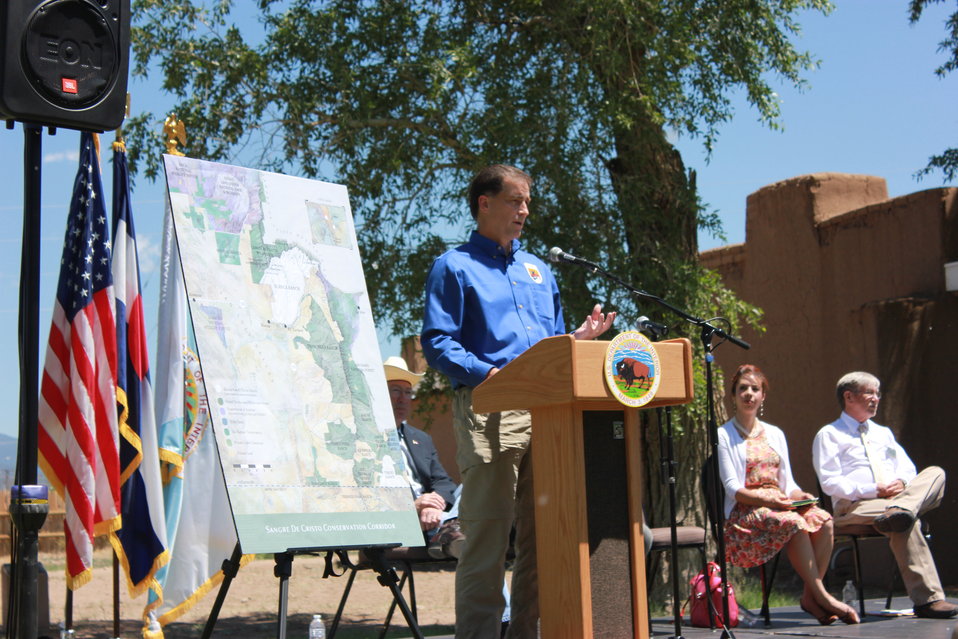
Historic Conservation Easement in Sangre de Cristo Mountains